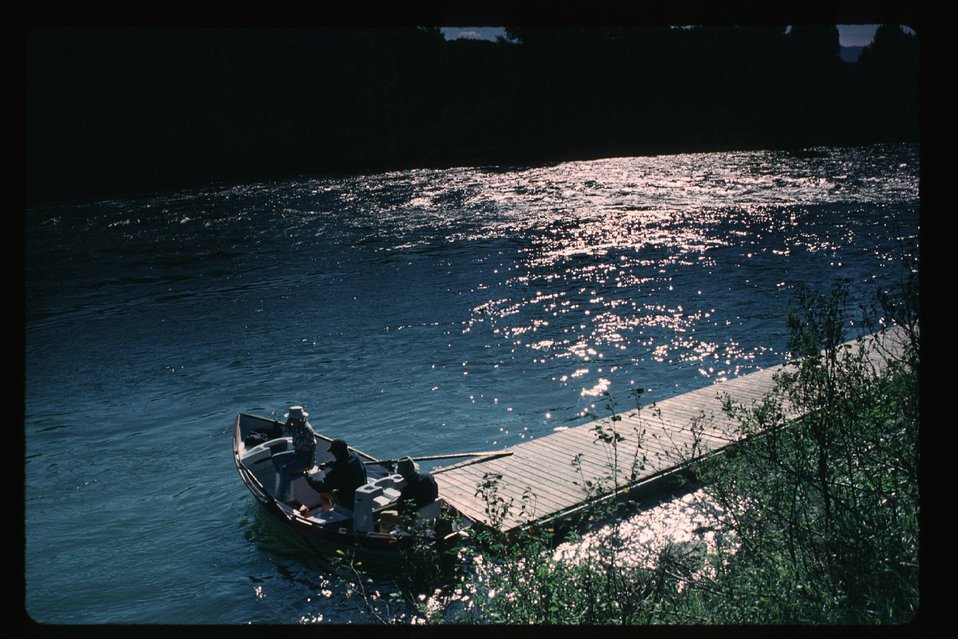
Scenic Birds of Prey National Conservation Area BOP Owyhee Field Office LSRD Lower Snake River District